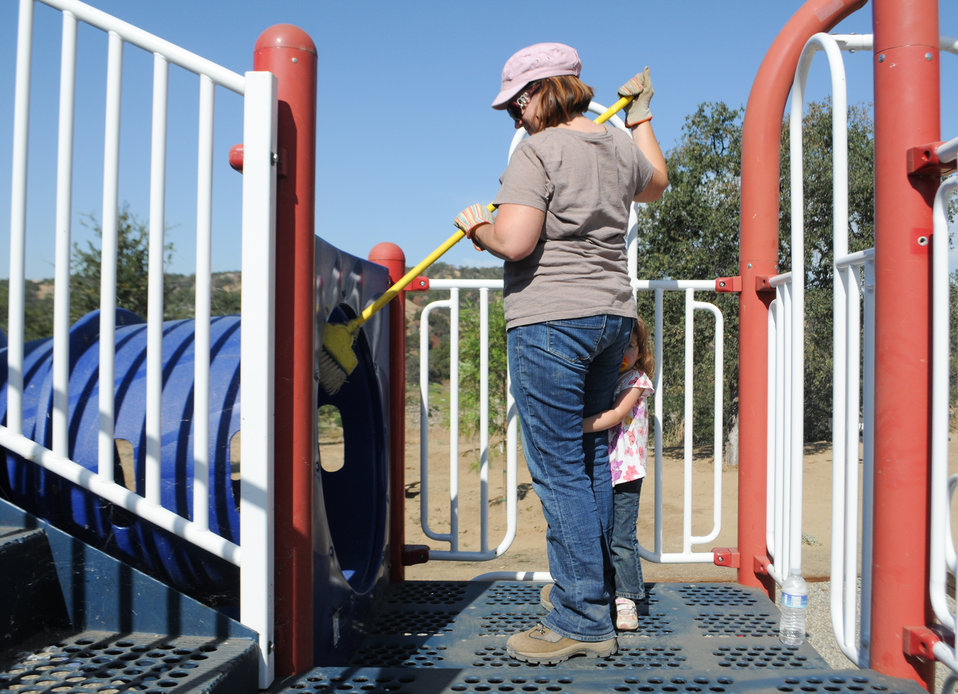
National Public Lands Day at Pine Flat Lake

Volunteers clean a playground at Pine Flat Lake near Sanger, Calif., Sept. 24 in celebration of National Public Lands Day. More than 60 volunteers turned out to help plant trees and build a new sand volleyball court and horseshoe pits at the park. Pine Flat was one of seven U.S. Army Corps of Engineers Sacramento District recreation parks that participated in the event.